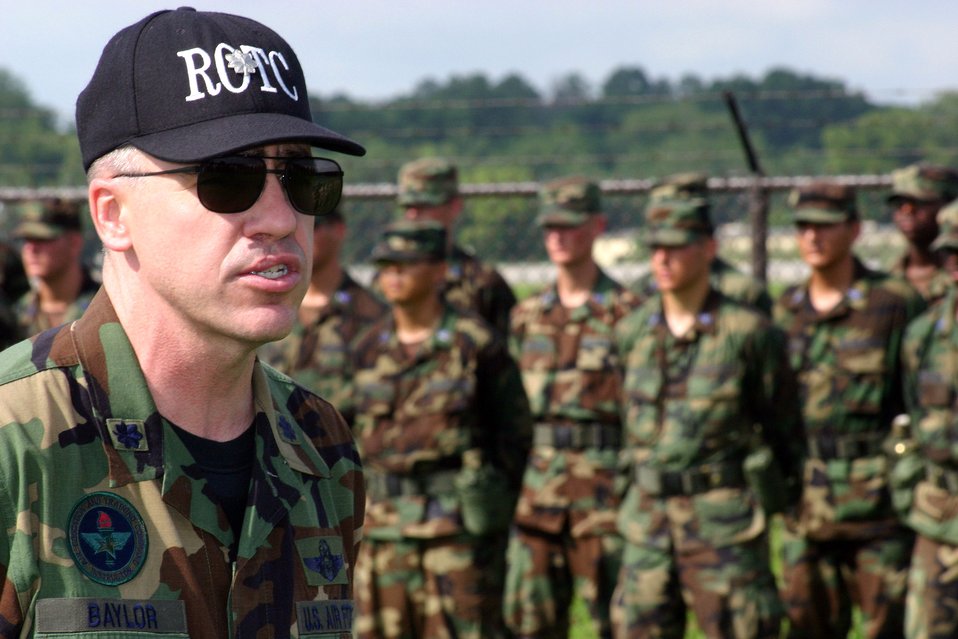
ROTC cadets complete 'Props and Wings Challenge'

Lt. Col. David Baylor, ROTC cadet field training director of operations, asks cadets to recite all the verses of the Air Force song July 17 during the Prop and Wings Challenge at Maxwell Air Force Base, Ala. The challenge tested more than 330 cadets with mental and physical activities during the 27-day field training event.